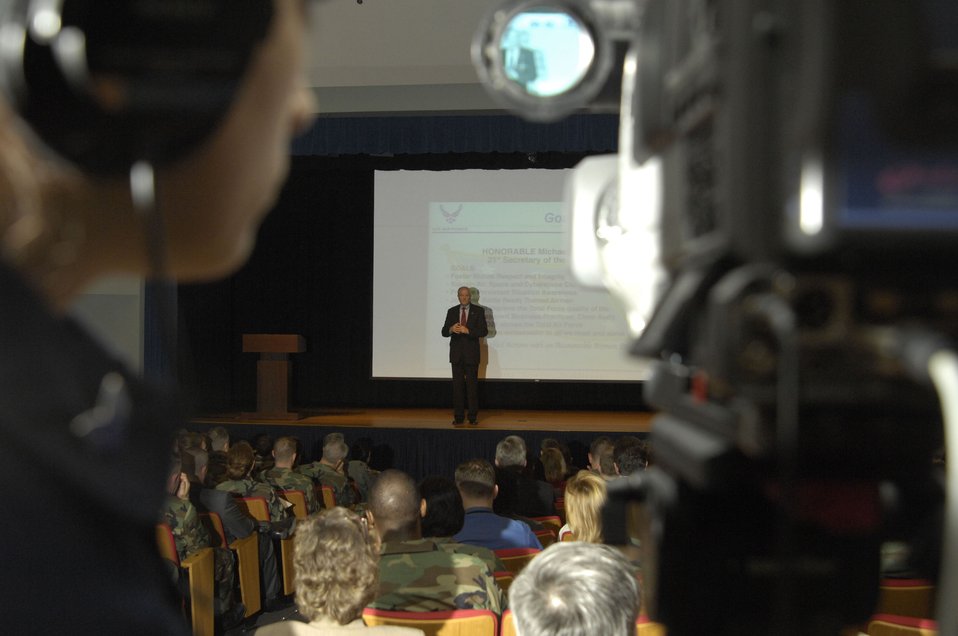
SECAF's town hall meeting

Senior Airman Rachael Herrmann films Secretary of the Air Force Michael W. Wynne during his town hall meeting with Airmen and Air Force civilians at the Pentagon Jan. 31. Following his discussion of where he expects the Air Force to be in the future, he took questions from the audience.